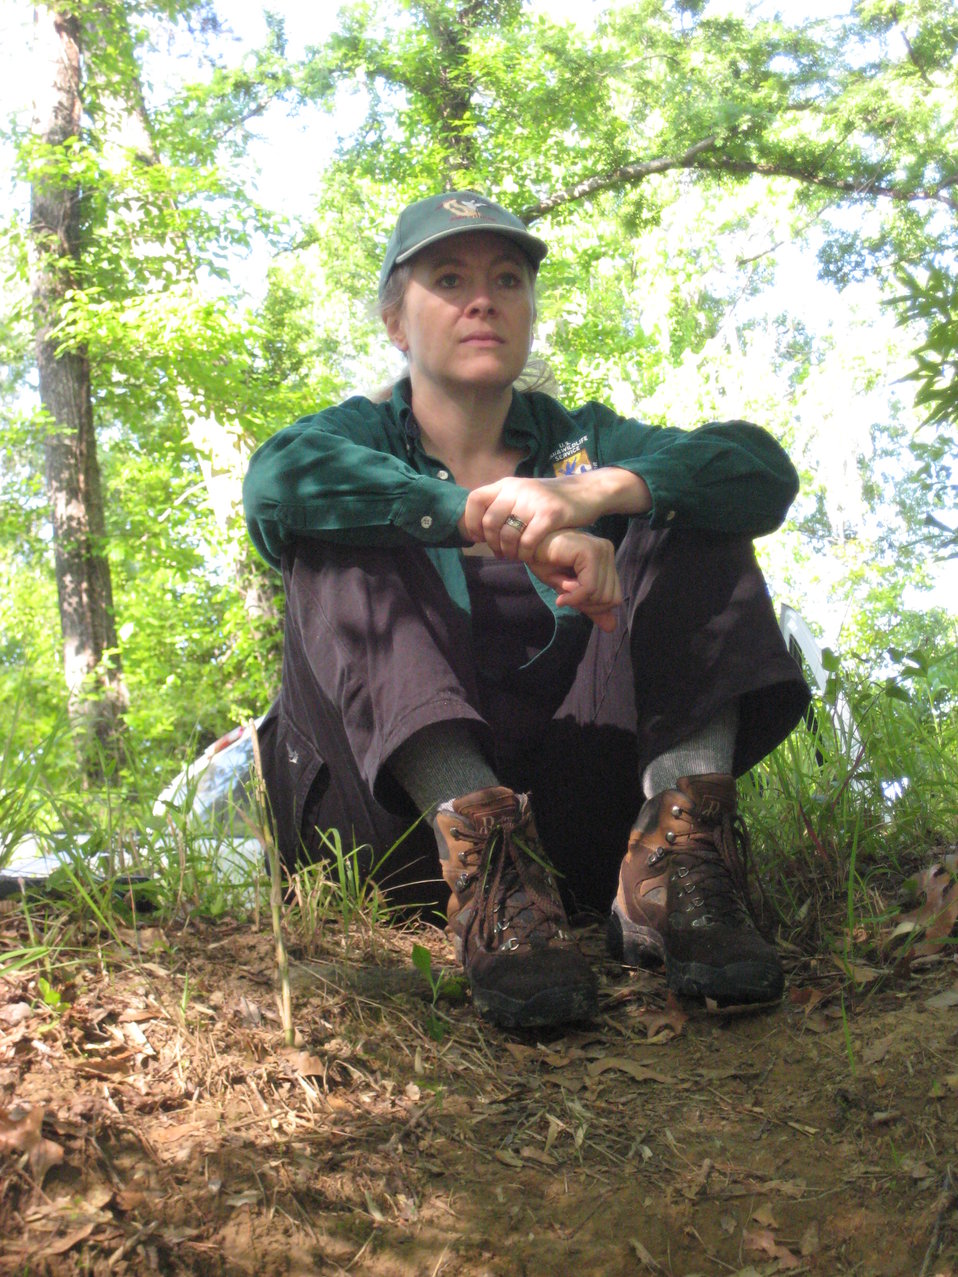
Anna-Marie York, NAWCA Grants Officer, Migratory Birds Program, USFWS